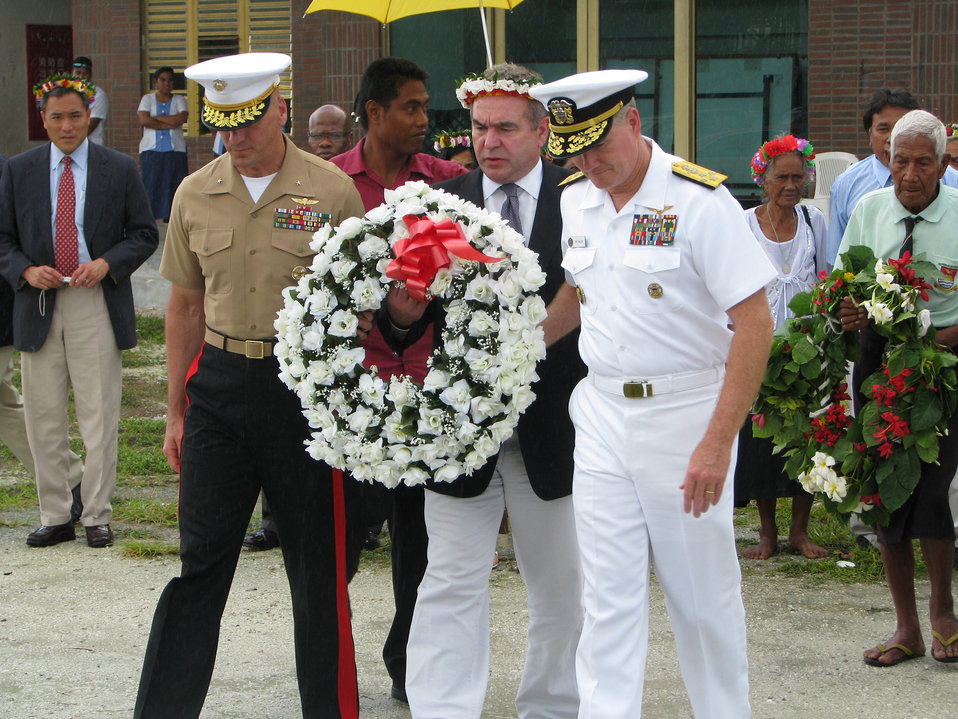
Assistant Secretary Campbell, Admiral Walsh, and Brig. Gen. Simcock Prepare To Lay a Wreath

Assistant Secretary for East Asian and Pacific Affairs Kurt Campbell, center; Admiral Patrick Walsh, commander of U.S. Pacific Fleet, right; and Office of the Secretary of Defense South/Southeast Asia Principal Director Brig. Gen. Richard Simcock; prepare to lay a wreath at the Battle of Tarawa Memorial in Kiribati on June 27, 2011. Kiribati is the first stop on a visit of South Pacific nations for a U.S. delegation that includes Assistant Secretary Campbell, Walsh, Simcock, and U.S. Agency for International Development (USAID) Assistant Administrator Nisha Biswal.